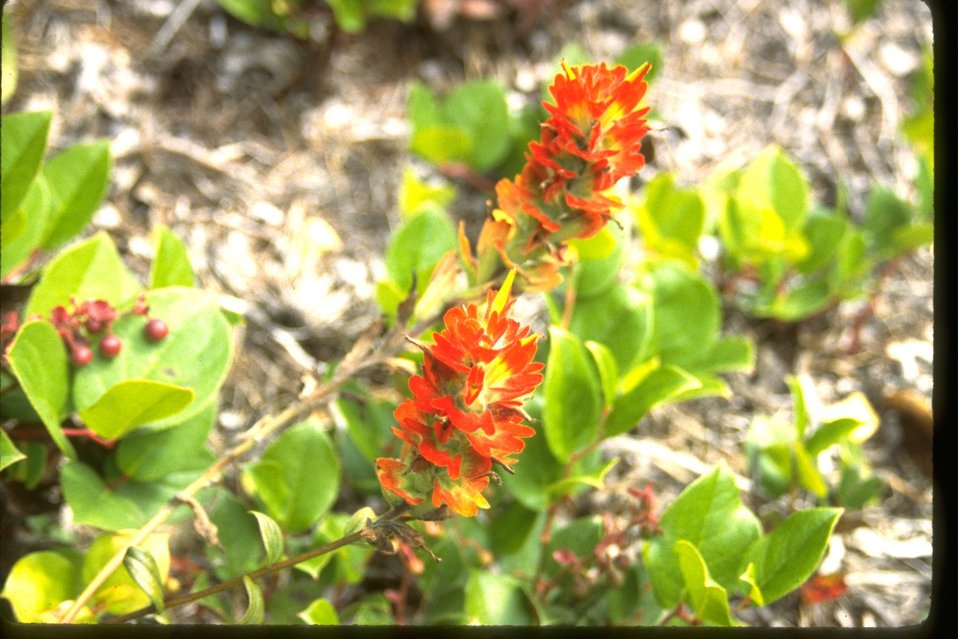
Indian Paintbrush.